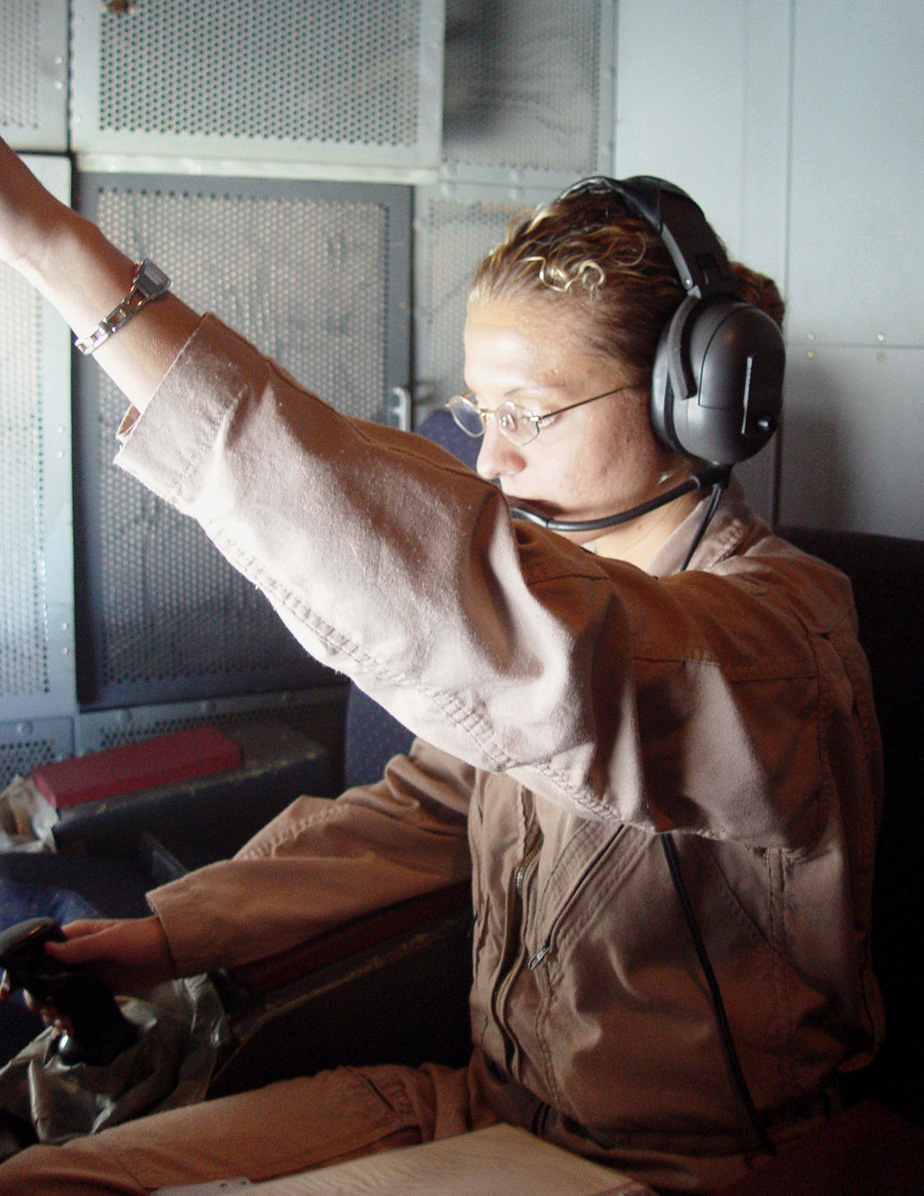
Monke

OPERATION ENDURING FREEDOM -- Airman 1st Class Katherine Monke operates the boom on a KC-10 Extender during a recent combat mission over Afghanistan.